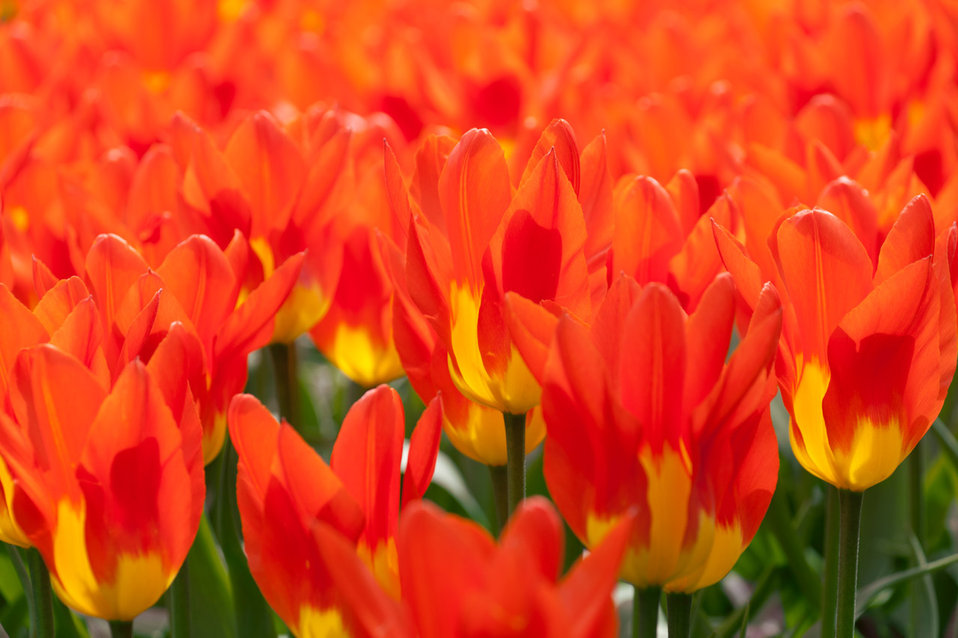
Yellow red tulips

Vivid red and yellow tulip background.